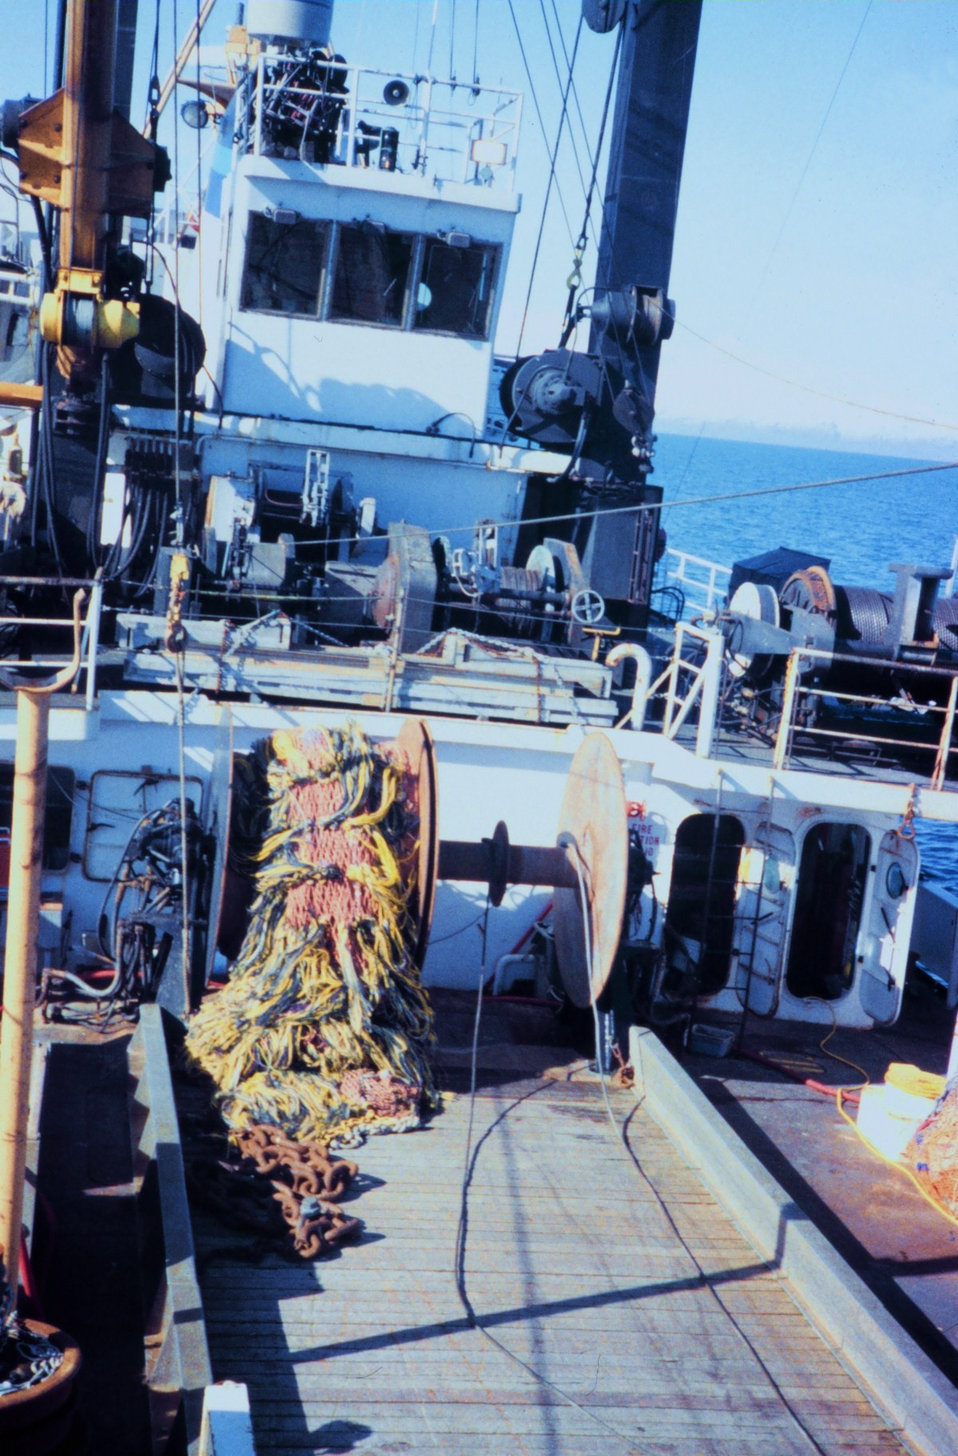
One net out while a second net remains on the real during trawling operations. Yellow fringe lines on cod end of net on reel is chaffing gear that protects cod end from abrasion on bottom.